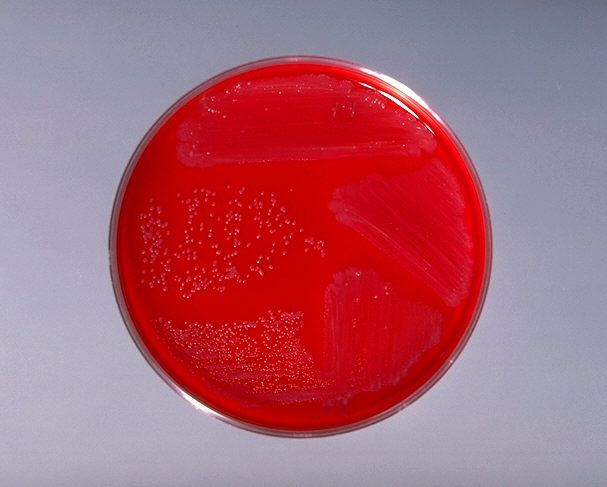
Blood agar plate culture of Corynebacterium renale.